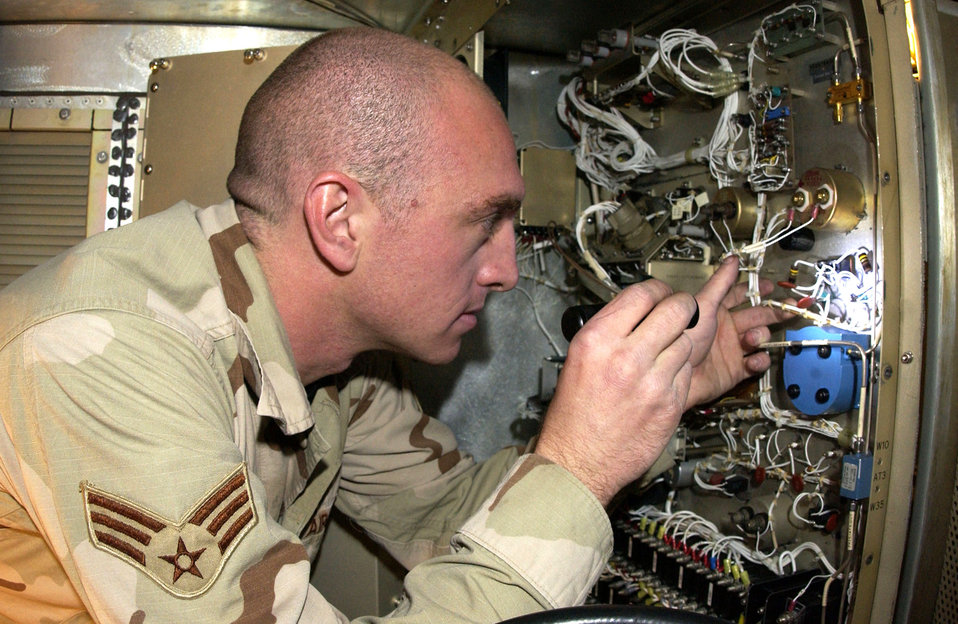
I can see you

Senior Airman Timothy Marks repairs a damaged component of an AN/TPS-75 air surveillance radar Feb. 27 at Kirkuk Air Base, Iraq. The AN/TPS-75 allows air battle managers located at Balad AB, Iraq, to remotely see aircraft flying in northern Iraq. Airman Marks is a ground radar systems techinician with the 727th Expeditionary Air Control Squadron.